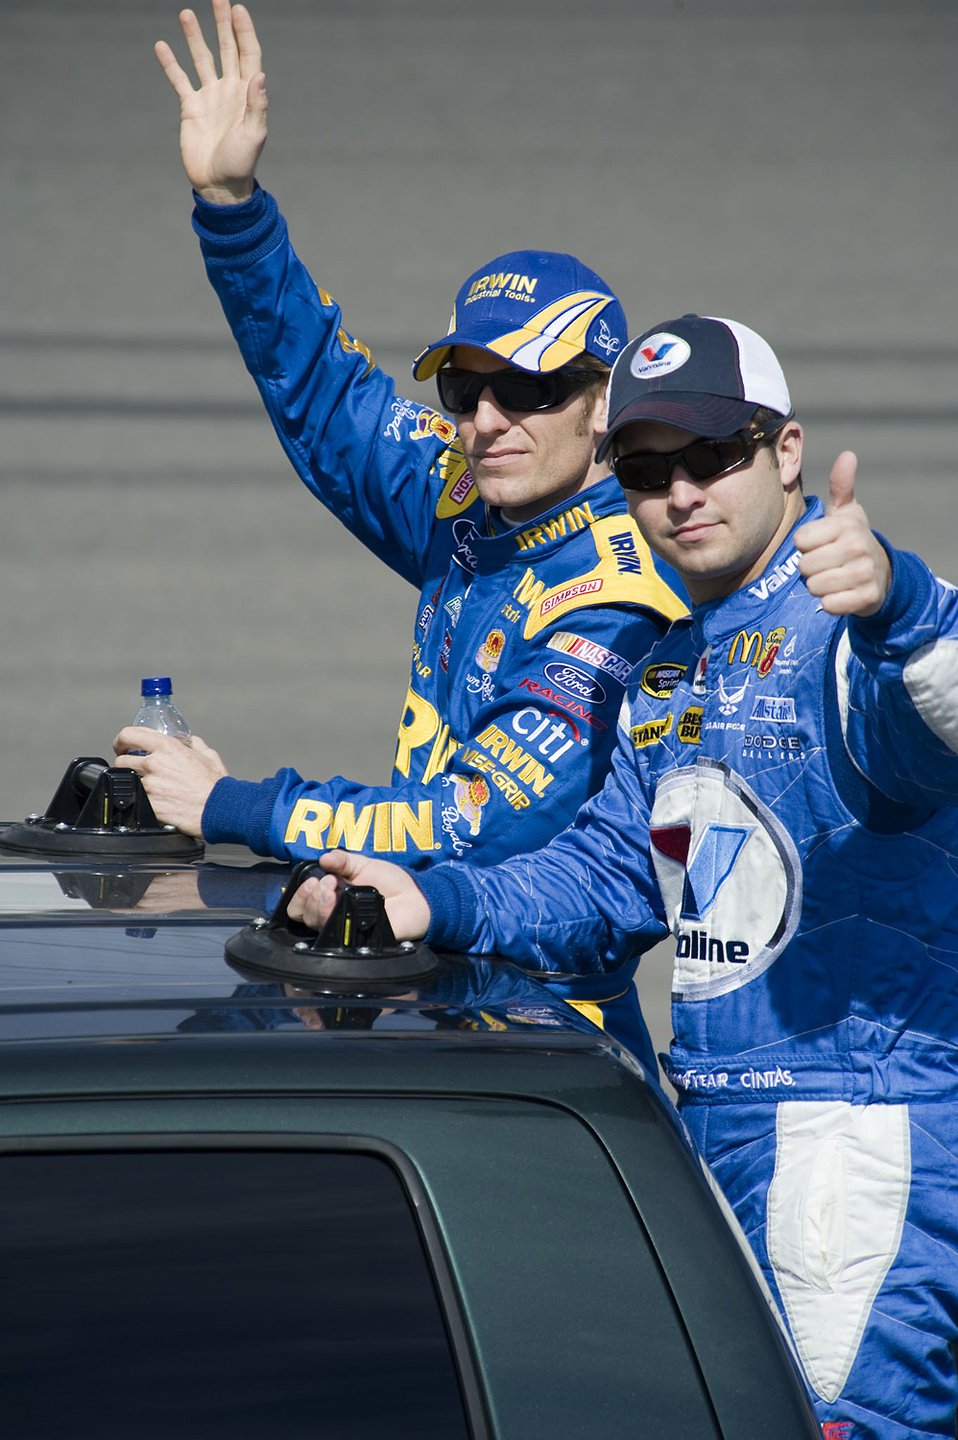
Air Force teams with NASCAR to aid recruiting

Sprint Cup drivers Reed Sorenson (front) and Jamie McMurray wave to the crowd during driver introductions for the Shelby 427 race March 1 at the Las Vegas Motor Speedway. Mr. Sorenson, driver of the No. 43 Air Force sponsored Dodge, finished the race in 34th place after spinning in turn two on lap 138.